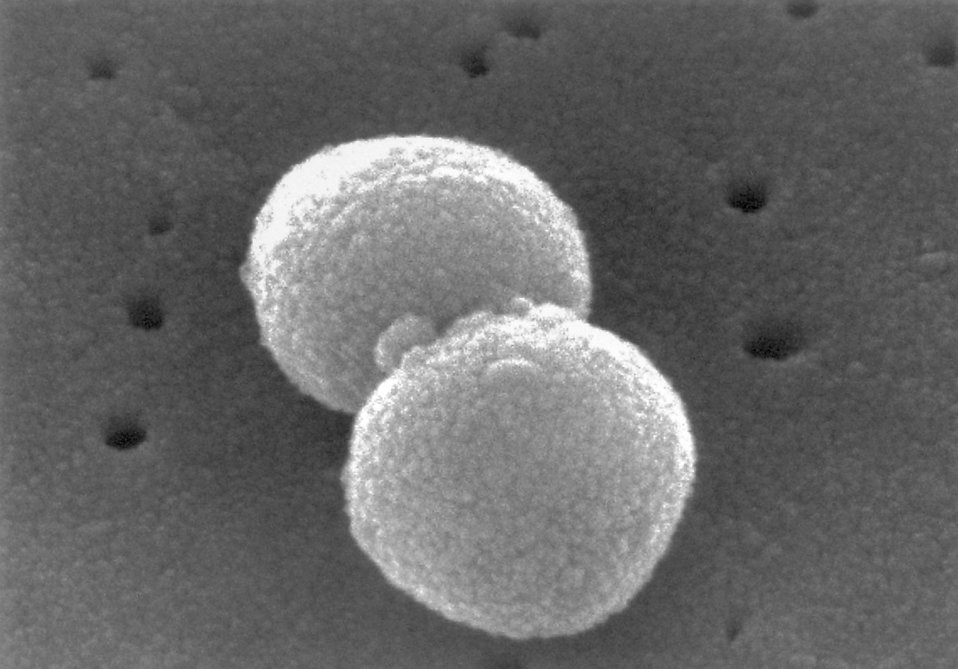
Scanning electron micrograph (SEM) of a number of Gram-positive Streptococcus pneumoniae bacteria.